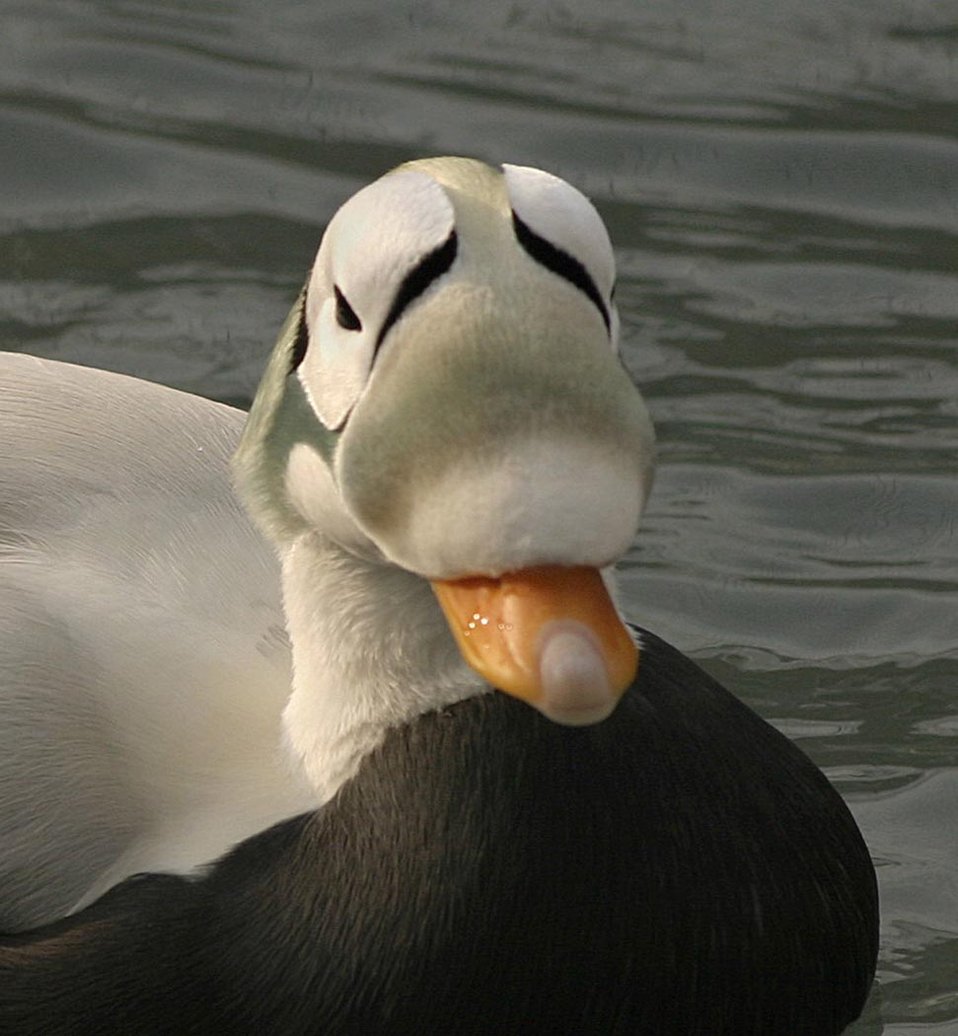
Threatened spectacled eider male (Somateria fischeri), Alaska SeaLife Center, Seward, Alaska